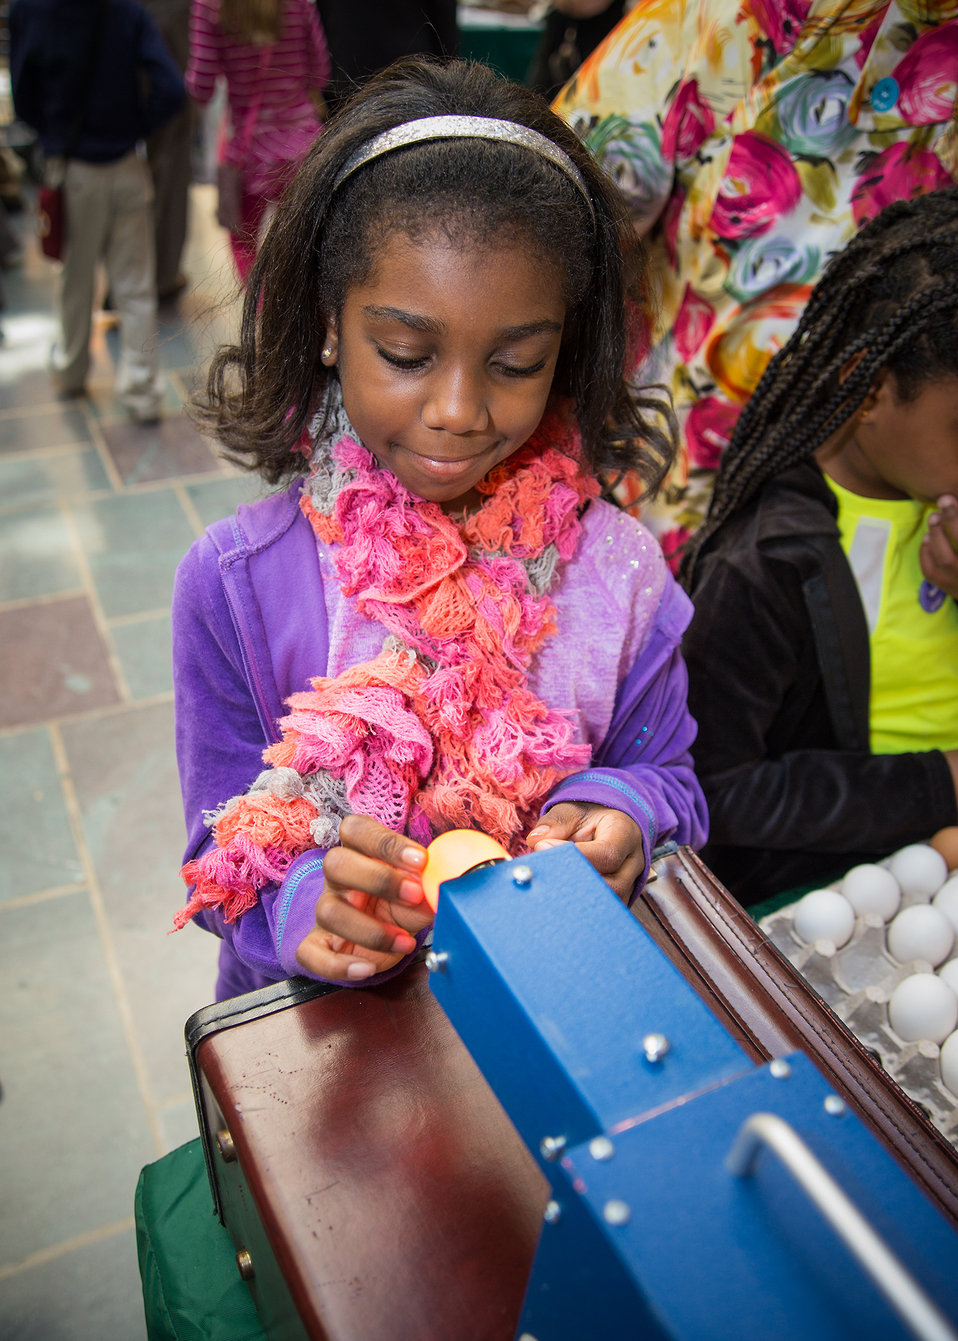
Skylar Smith candles an egg at the U.S. Department of Agriculture (USDA) .Agricultural Marketing Service (AMS) booth at USDA's annual “Bring Your Daughters and Sons to Work on Thursday, Apr. 24, 2014 in Washington, D.C. Skylar’s mother Stephanie Smith works for the USDA Rural Utilities Service (RUS). The event offers employees the opportunity to bring their children to work to experience what they do in their profession and offer insight into other careers at the Department of Agriculture.